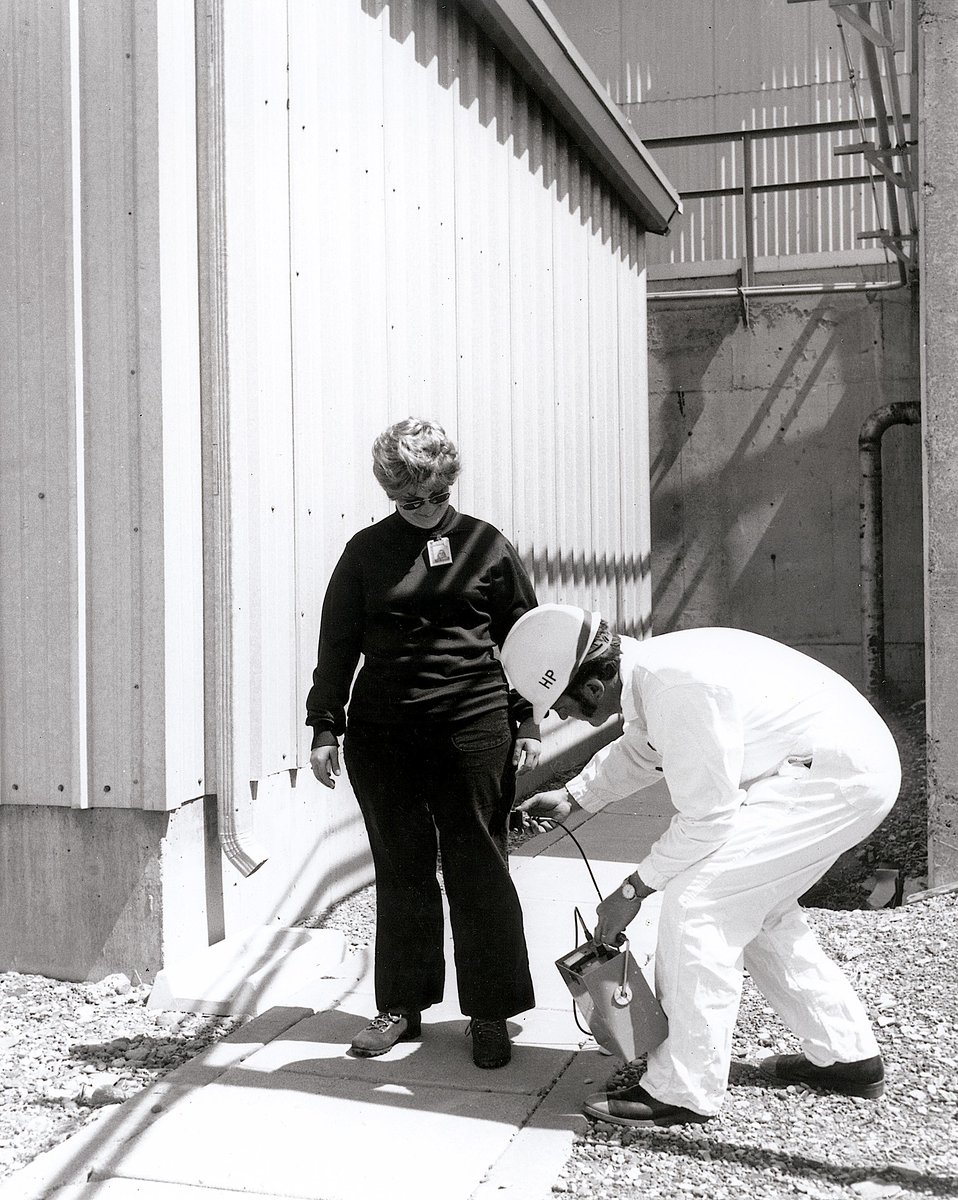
A health physicist uses a portable radiation monitor to check for possible radioactive contamination as a worker leaves a radiation area.